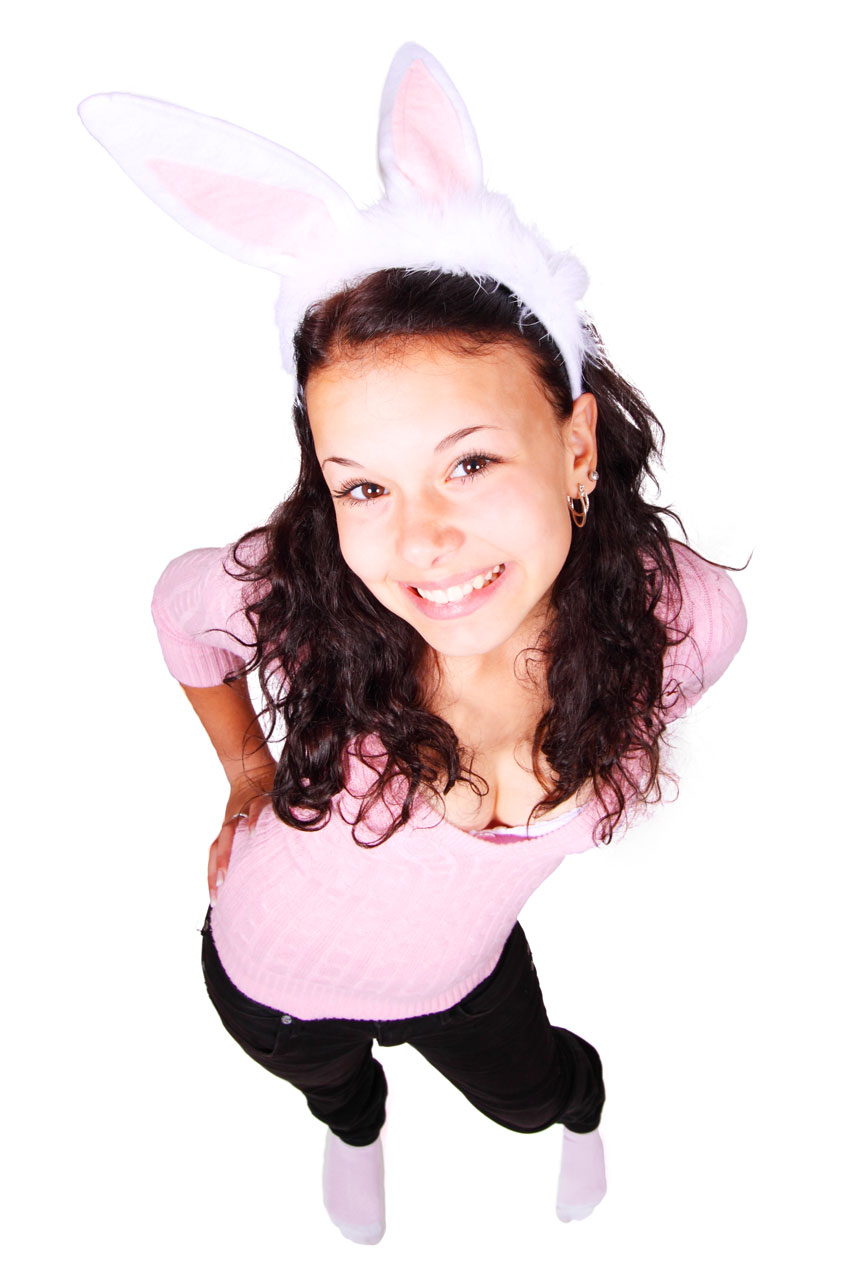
Fun bunny woman

Young woman dressed as bunny.